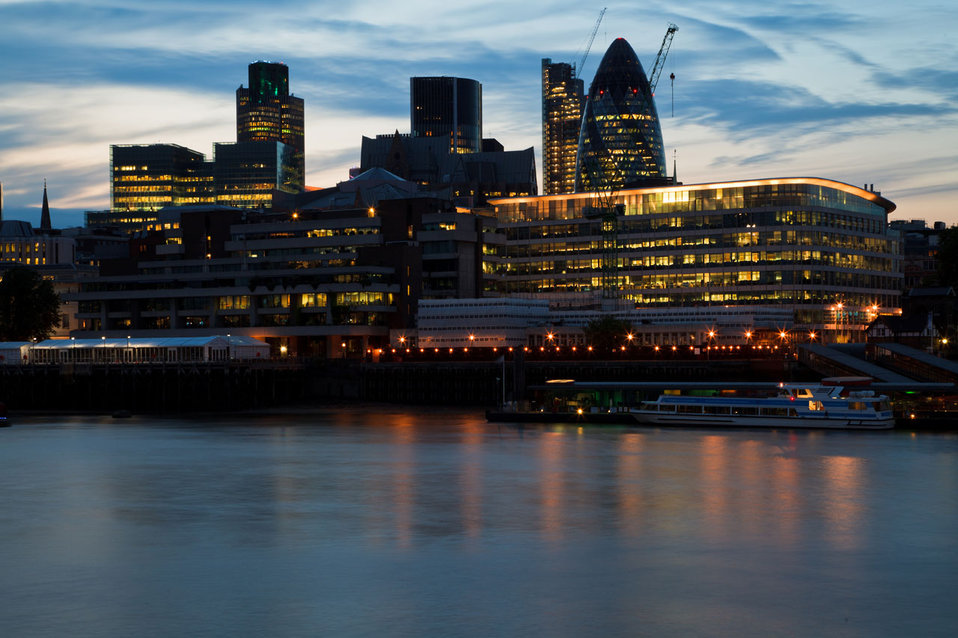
Urban skyline at night in london.